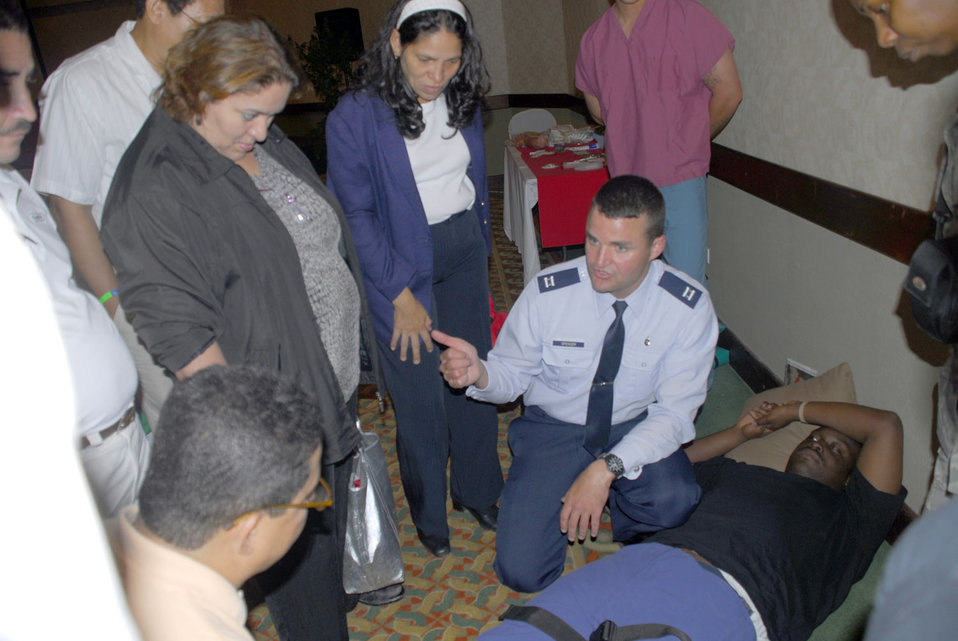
JTF-Bravo MEDEL team teach trauma course to Honduran medical proffesionals

Capt. Dennis Spencer discusses with a group of Honduran doctors and health technicians techniques used in dealing with fractures at a Honduran medical conference July 8 in Teguicigalpa, Honduras. More than 200 medical professionals from across Honduras attended the course offered by Joint Task Force-Bravo Medical Element. Captain Spencer is deployed from Elmendorf Air Force Base, Alaska.